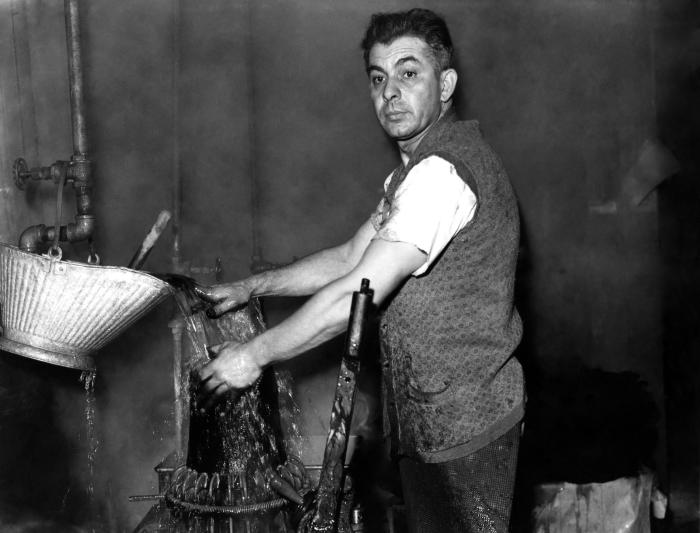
Provided by the Center for Disease Control's (CDC), National Institute for Occupational Safety and Health (NIOSH), this historic image, shot inside a Connecticut hat manufacturing plant, depicted a fur hat factory worker who was in the process of 'blocking' a hat under a stream of running water. Blocking involves shaping a hat using a block, hat cone in the basic shape of the final hat, and water. This man was not wearing a protective filtered breathing mask, goggles, or gloves. Working with newly processed fur, which had been 'carroted', or fixed with mercury nitrate, workers could be exposed to airborne mercury, thereby, suffering the detrimental neurologic consequences from its inhalation. Using steam, which was integral to the hatters' industry, the airborne dissemination of this neurotoxic element was facilitated.